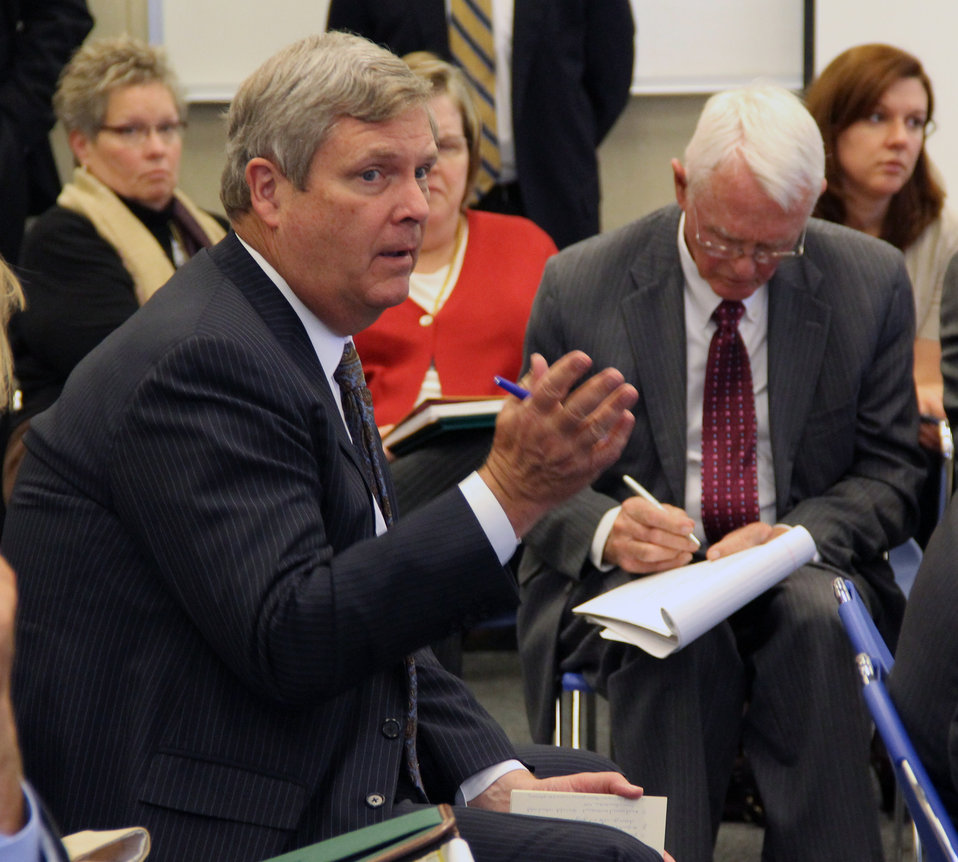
Agriculture Secretary Tom Vilsack leads a Federal Drought Workshop in Omaha, NE on Tuesday, Oct. 9, 2012. This was the first of four regional workshops to outline resources available to assist with drought recovery effort. Secretary Vilsack indicated that President Obama had directed federal agencies to take every possible step to help farmers and ranchers, businesses, and rural communities recover as a result of one of the country's worst droughts in decades. The U.S. Department of Agriculture (USDA) is partnering with local, state and federal partners to hold the workshops, working closely with the Department of Commerce, the Small Business Administration and the Federal Emergency Management Agency to facilitate these meetings.